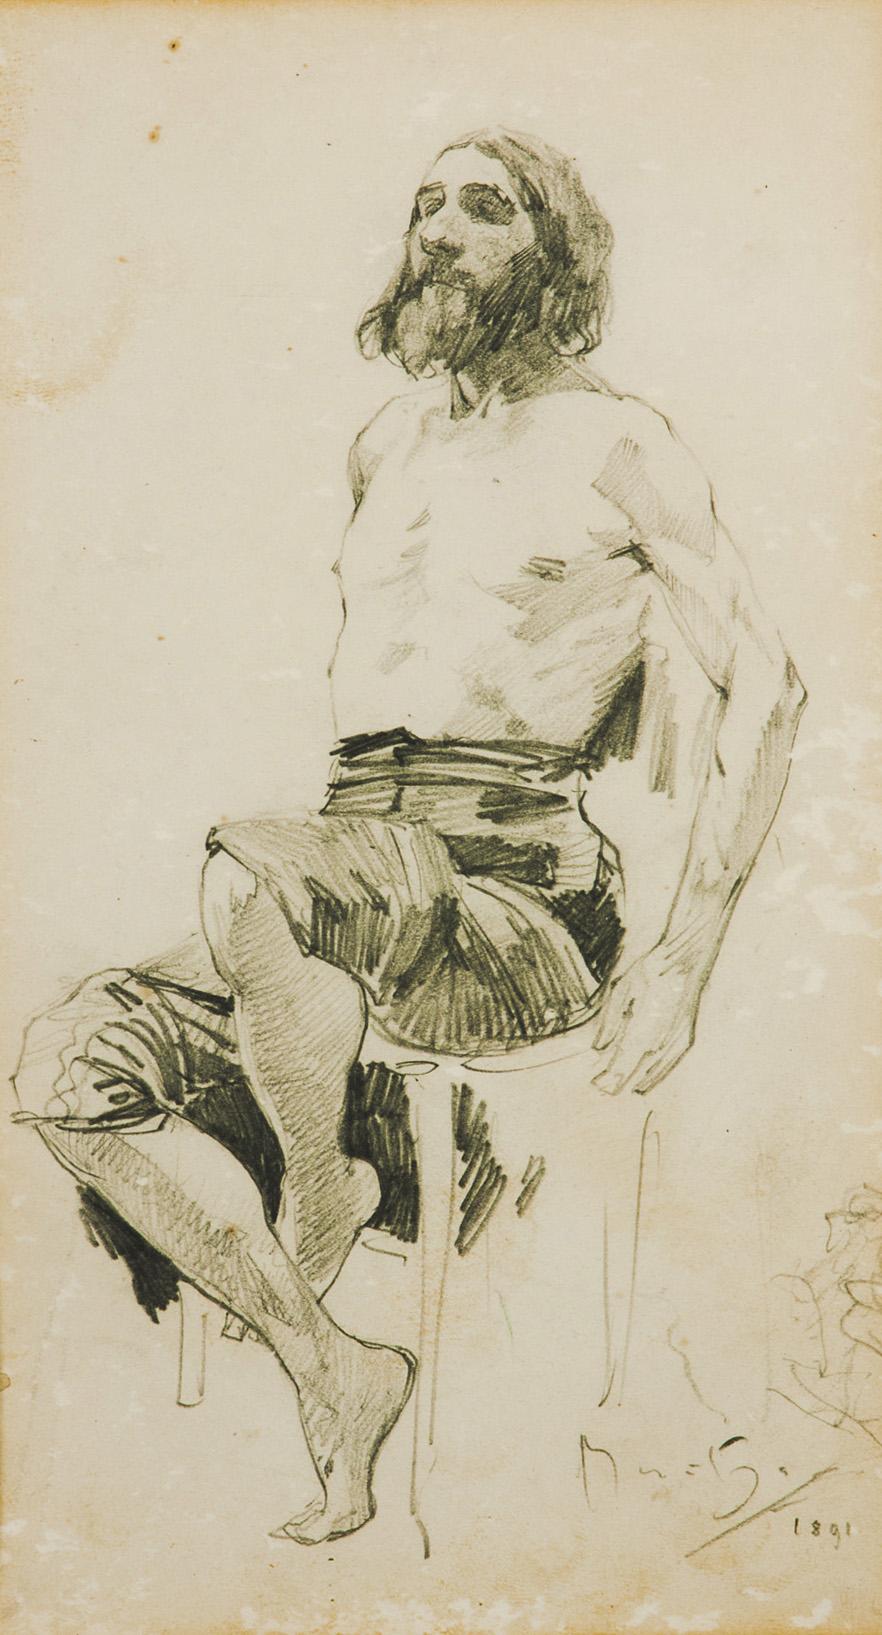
Studie eines sitzenden Mannes, rechts unten signiert und datiert: Mucha 1891, Bleistift auf Papier, 18 x 10 cm